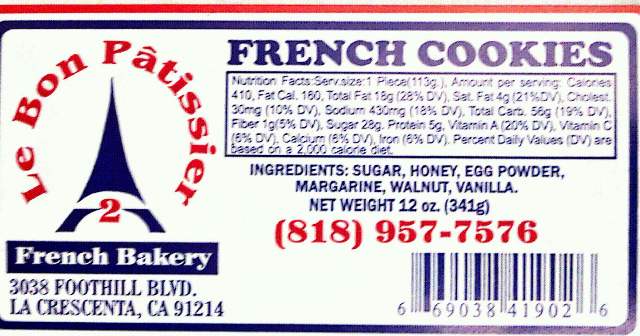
RECALLED - Pastry Products

April 5, 2011 – Product Recall – Le Bon Patissiere-2, Inc. Announces Voluntary Recall On Select Le Bon Patissiere Products That Contain Undeclared Allergens.